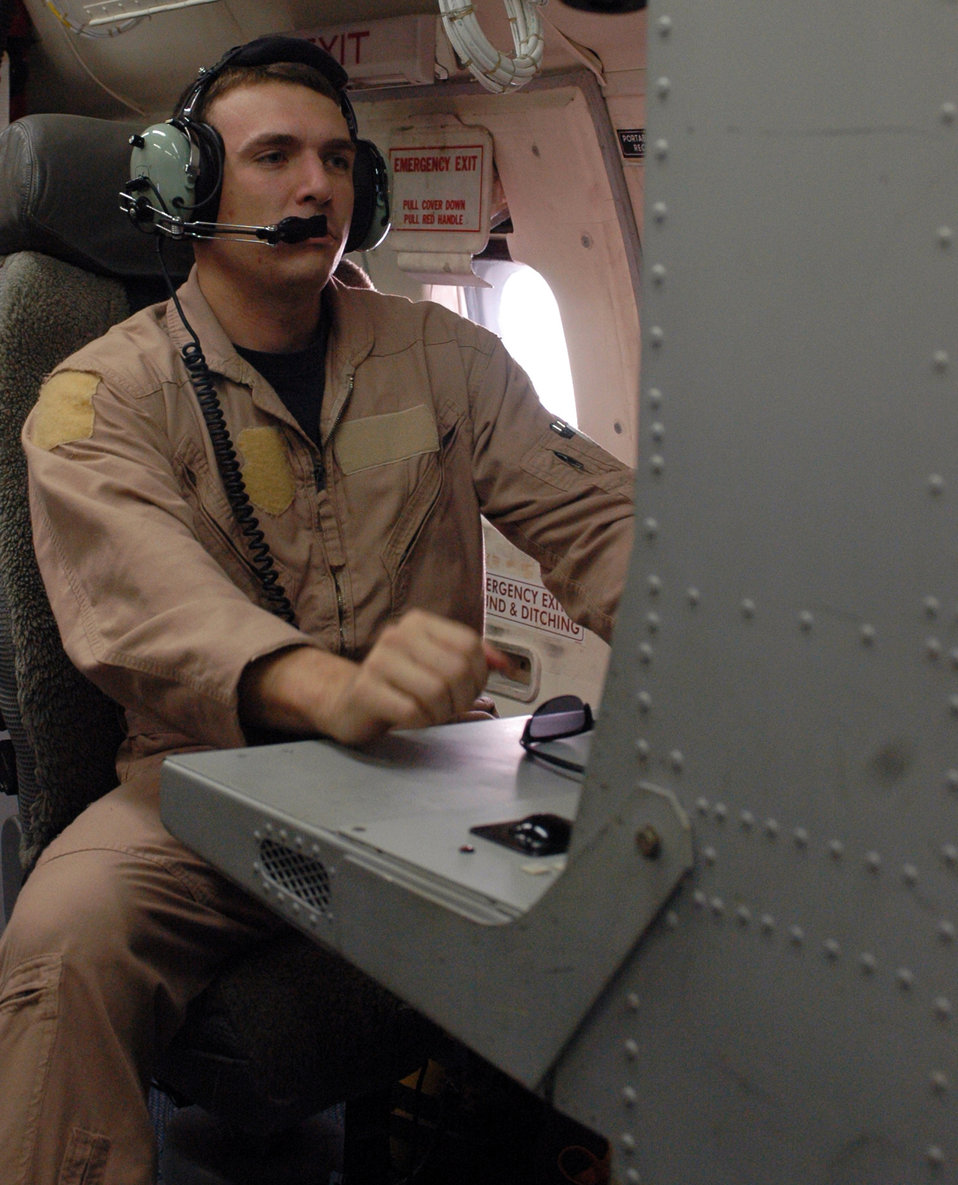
JSTARS are eyes of the night

Staff Sgt. Anthony Jett runs final checks on his computer system aboard an E-8C Joint Surveillance Target Attack Radar System aircraft prior to takeoff from an air base in Southwest Asia. JSTARS crews provide support to both air and ground forces. Sergeant Jett is an airborne intelligence technician with the 116th Expeditionary Airborne Command and Control Squadron.